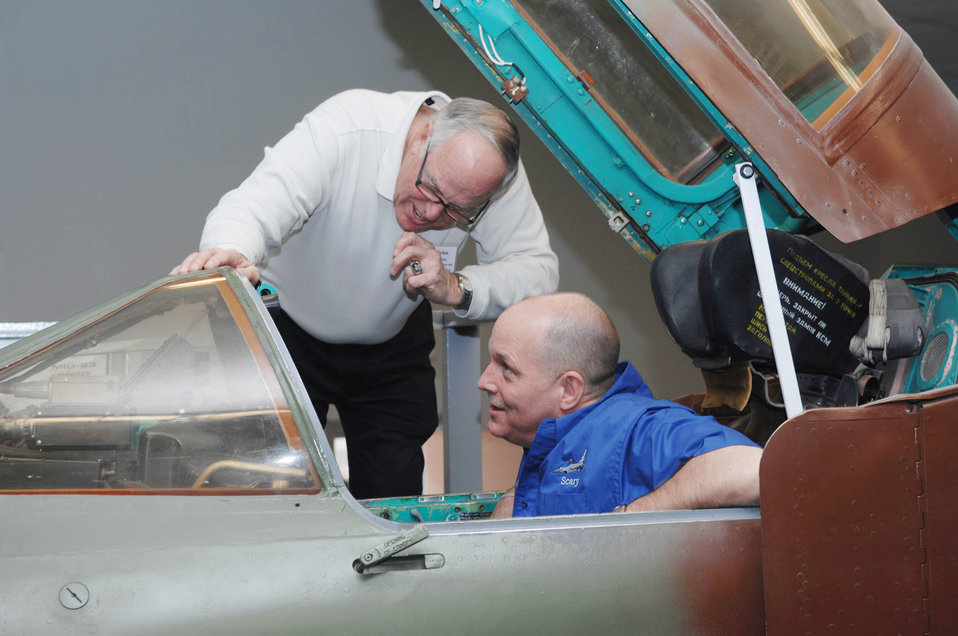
Past, present Shooters unite

Lt. Col. Doug Schaare (right) and retired Lt. Col. John Peebles check out a MiG-23 Flogger F aircraft static display March 6, 2010, at the threat training facility at Nellis Air Force Base, Nev. Colonel Schaare is a former 55th Fighter Squadron